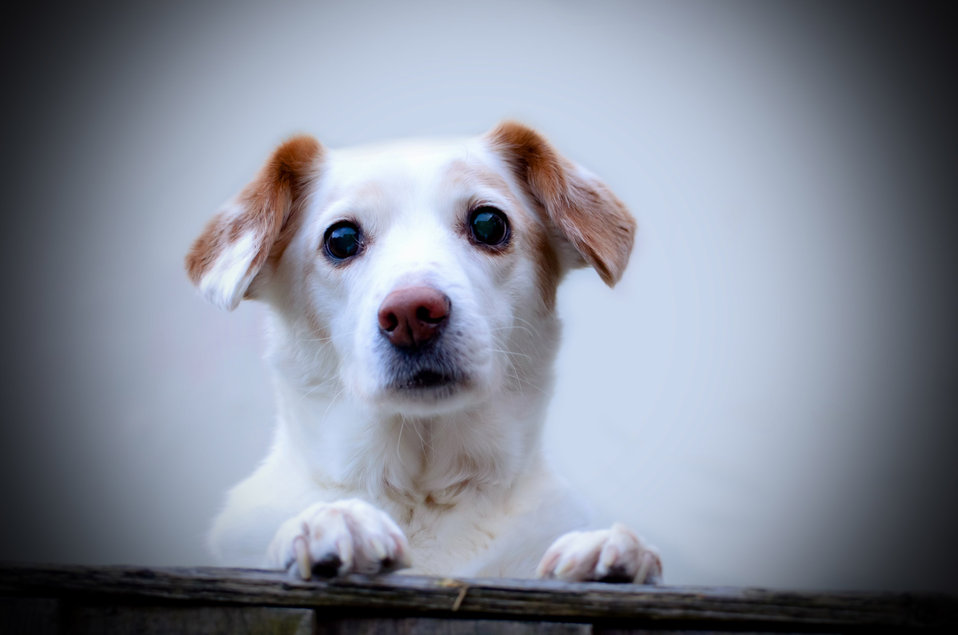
Look to me - dog.